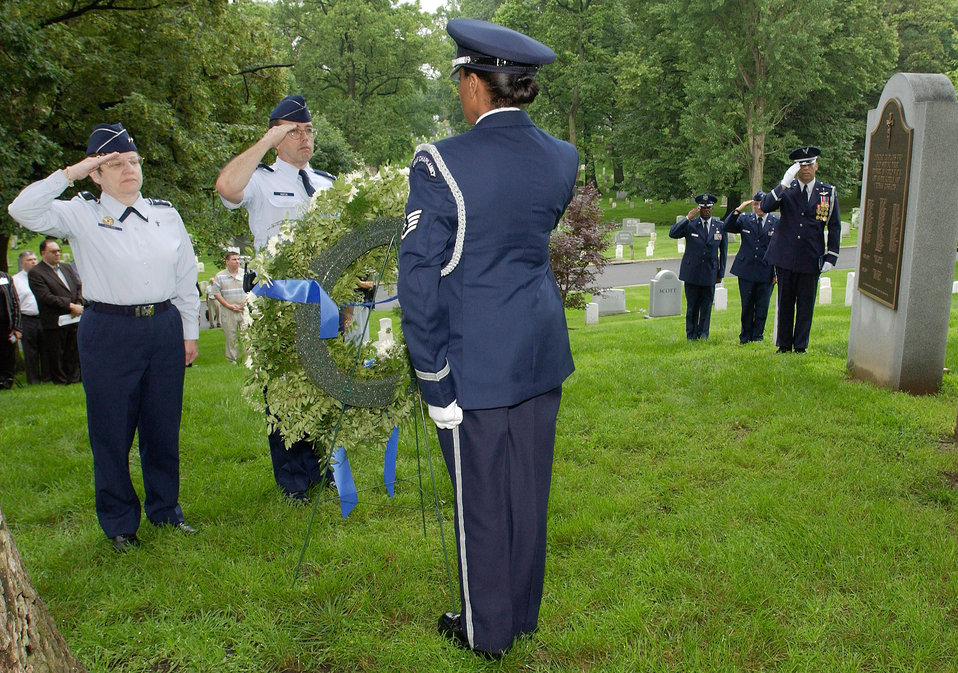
NATO Chaplains

ARLINGTON, Va. (AFPN) -- Chief of Air Force Chaplain Service, Chap. (Maj. Gen.) Lorraine Potter (left), and Chap. (Col.) Darrell Morton salute during a memorial and wreath-laying service at Arlington National Cemetery on June 19. The NATO chaplains are in the Washington area for a weeklong NATO Allied Air Force Chief of Chaplains Consultative Conference.